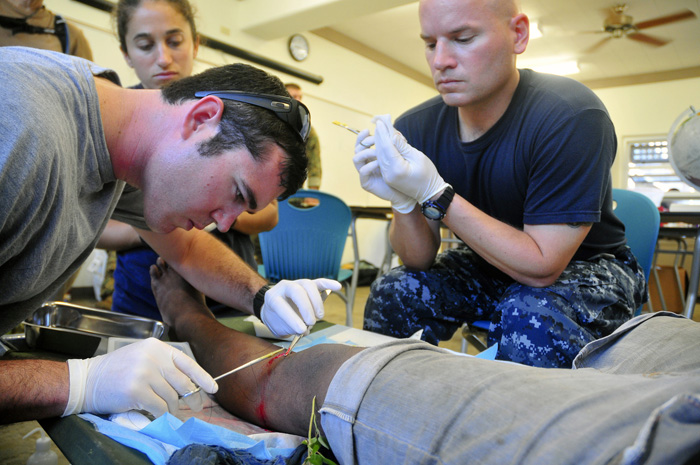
Australian Able Seaman Pearson, Lt. Bloir, and Project HOPE Volunteer Taylor Put Stiches in a Micronesian Boy's Leg

Able Seaman Thomas Pearson of Royal Australian Navy, with help from Lt. Michael Bloir and Project HOPE volunteer Hanna Taylor, puts four stitches in a Micronesian boy's leg at Nanpei medical civic action project site for Pacific Partnership 2011 in Pohnpei, Federated States of Micronesia, on July 9, 2011. Pacific Partnership 2011 will visit the islands of Tonga, Vanuatu, Papua New Guinea, Timor-Leste and the Federated States of Micronesia.